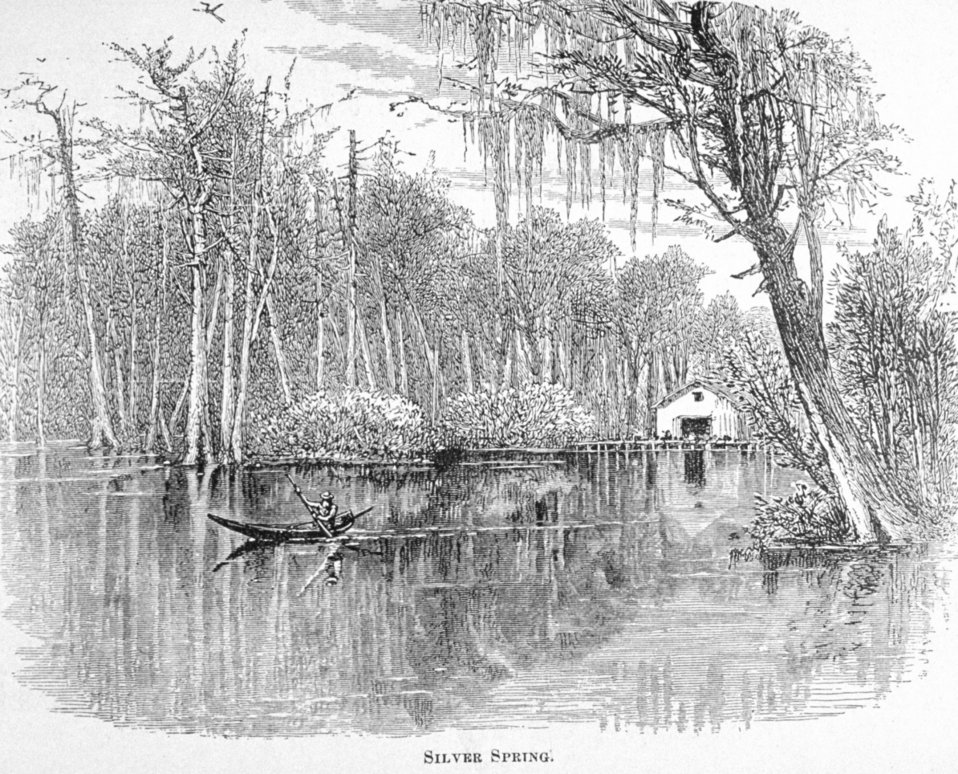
Silver Spring - in 'Florida for Tourists, Invalids, and Settlers' by George M. Barbour, 1881. Library Call No. F316 .B23 1881. A scene at the spring forming the headwaters of the Silver River, a tributary of the Ocklawaha, which is tributary of the St. John's River.